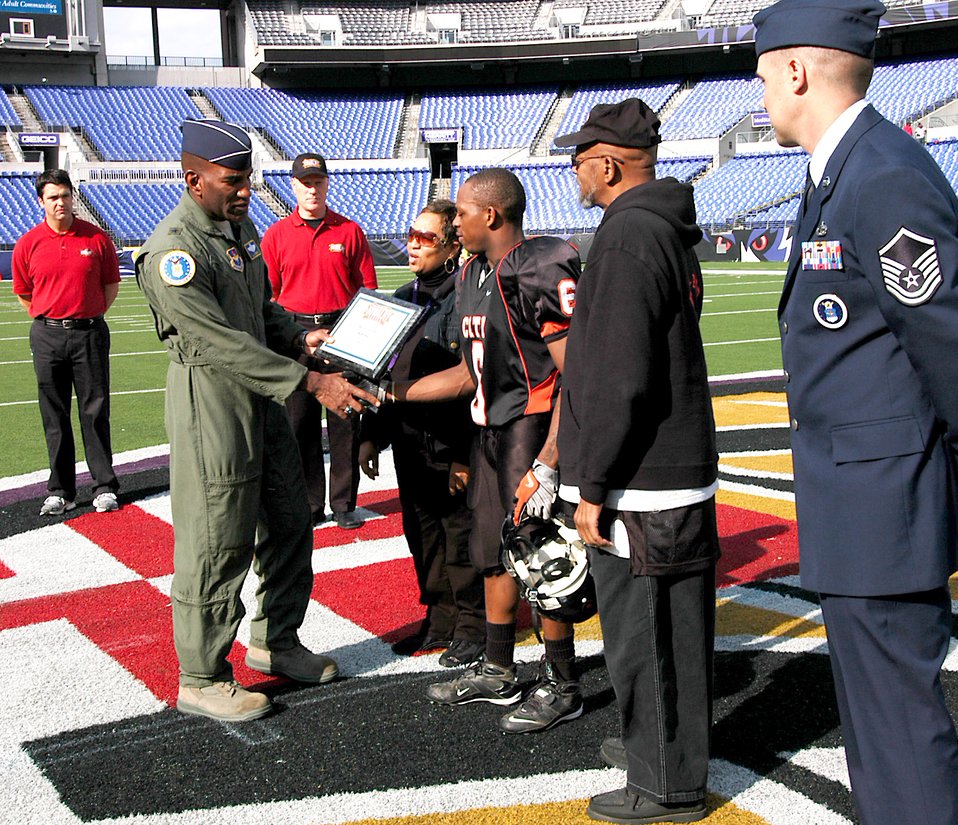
General shares game plan for success

Brig. Gen. Alfred J. Stewart presents Malik Pack of Baltimore City College High School a $500 college scholarship before game time Nov. 8 at M&T Bank Stadium in Baltimore. A Class of 1977 Baltimore Polytechnic Institute High School alumni, General Stewart shared inspirational words with both teams before the game and he presented a $500 college scholarship to a member of both high schools. General Stewart is the Air Force Recruiting Service commander.